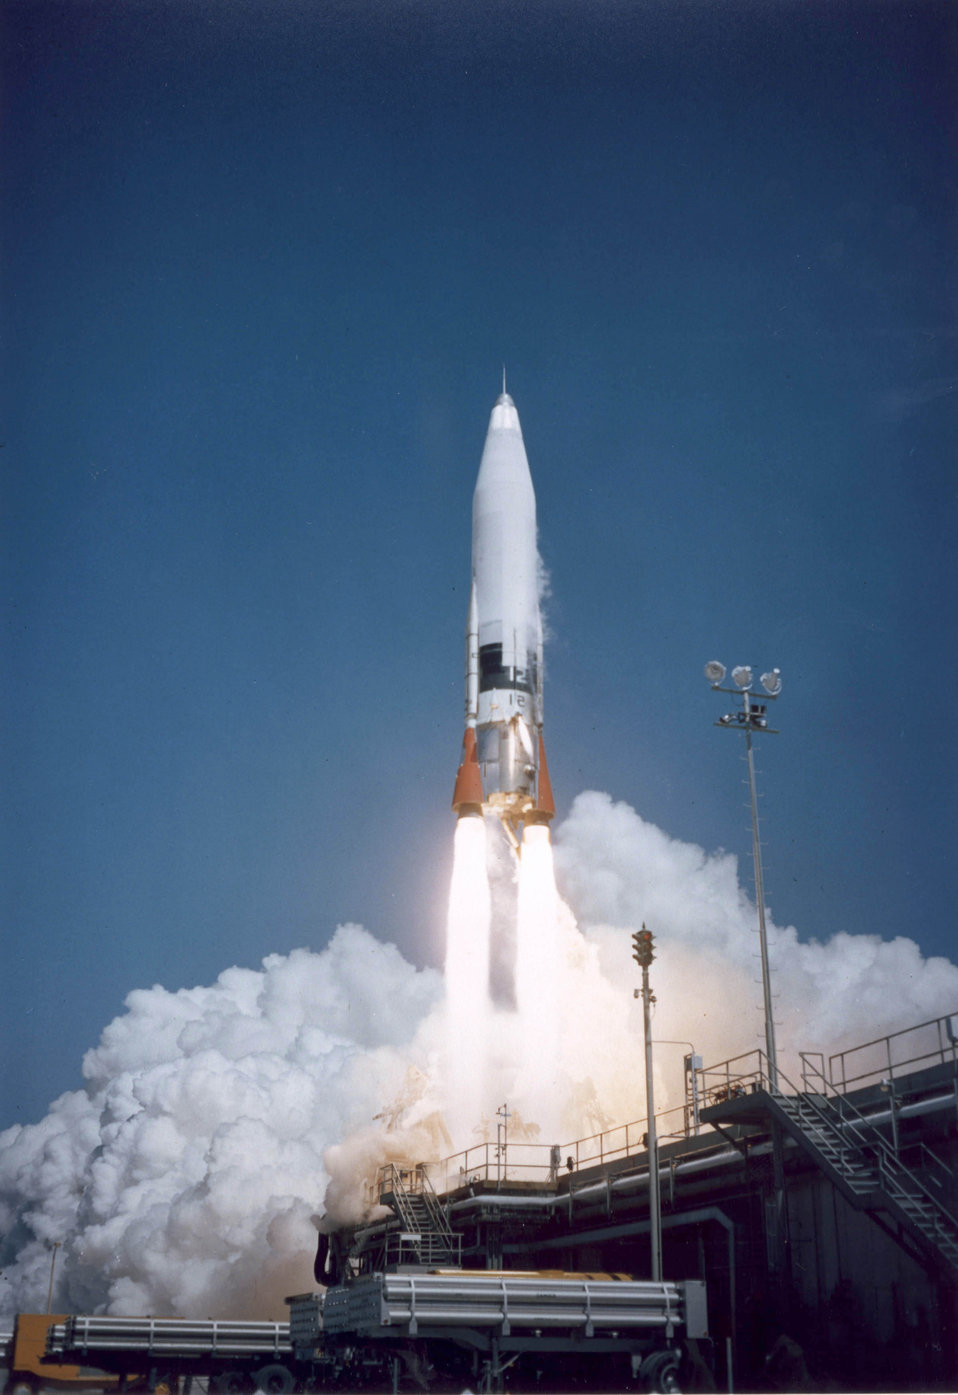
Atlas missle, test number 449

Cape Canaveral - February 20, 1958 -- The launch of a U.S. Air Force Atlas missle, test number 449, takes place from the Air Force Missle Test Center.